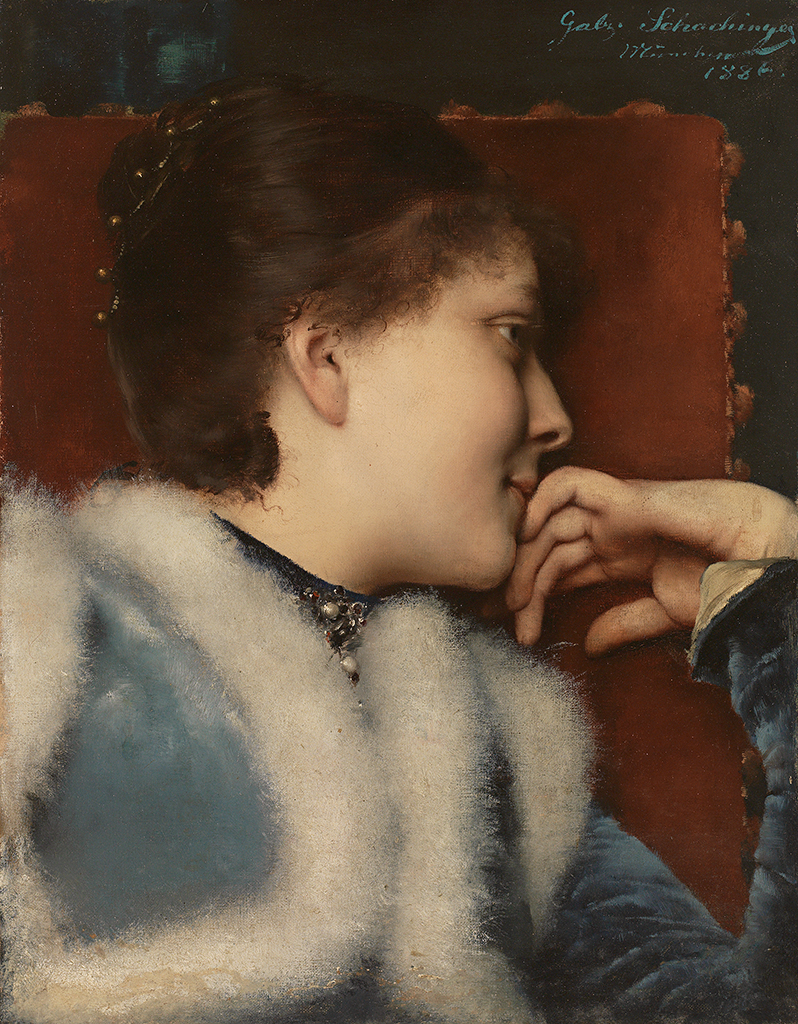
Deutsch: Portrait einer reizenden jungen Frau im Profil von rechts. Öl/Lwd. 48 x 37,5 cm. Sign. und 1886 dat.